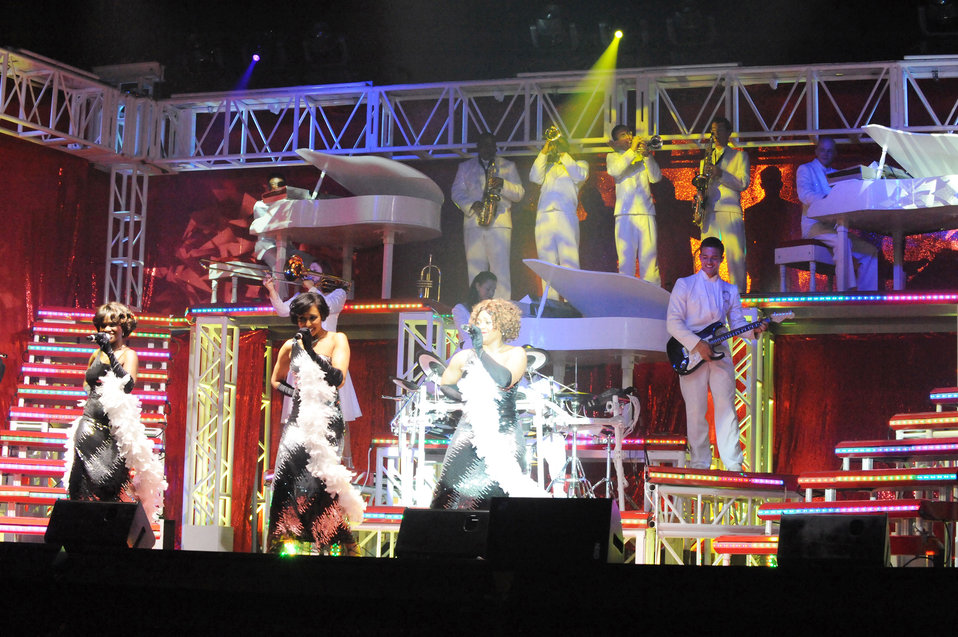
Life on the road with Tops In Blue

Tech. Sgt. Alison Maldonado (left), Staff Sgt. Aisha Smith (middle) and Senior Airman Tarryn Holyfield sing during a performance at the Patriot Hall Auditorium Feb. 3, 2010, in Sumter, S.C. Sergeant Maldonado, Sergeant Smith and Airman Holyfield are members of Tops In Blue.